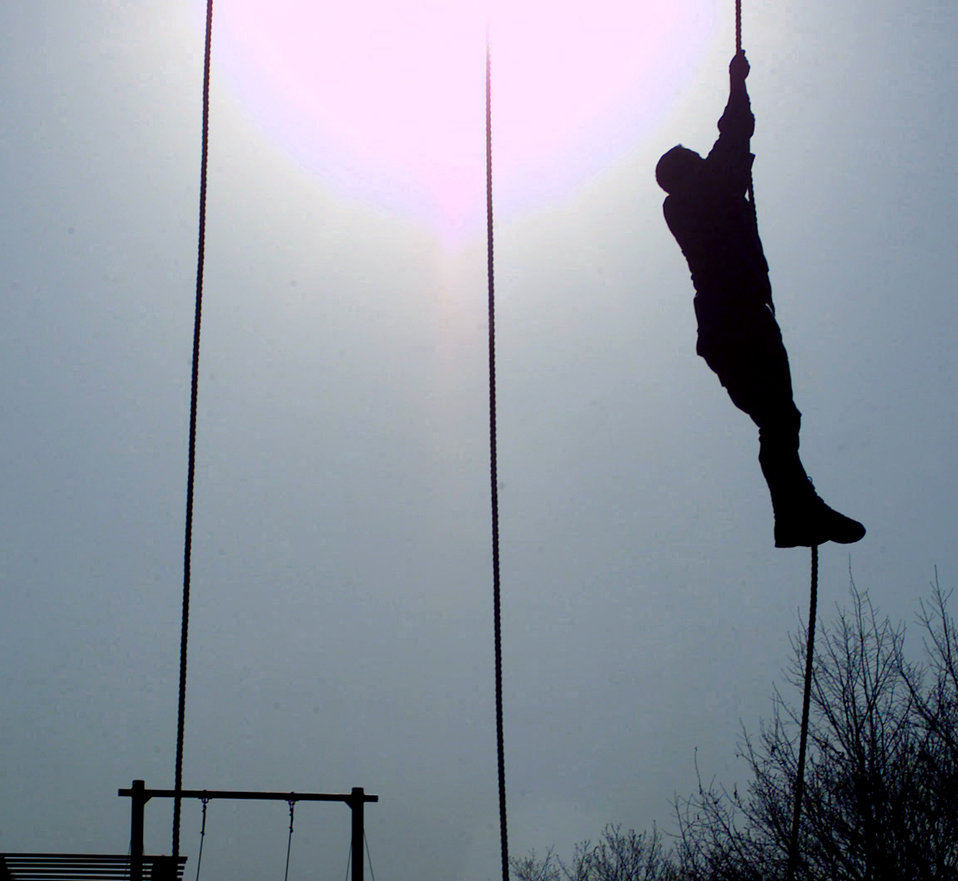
Tiger Challenge 2004

TWIN BRIDGES TRAINING AREA, South Korea -- Staff Sgt. Israel Del Toro climbs a rope during the obstacle-course portion of Tiger Challenge 2004 here April 9. This weeklong annual competition tests tactical air control and command technicians on their navigation skills, job knowledge, physical endurance and marksmanship. Sergeant Del Toro is assigned to the 25th Fighter Squadron at Osan Air Base, South Korea.